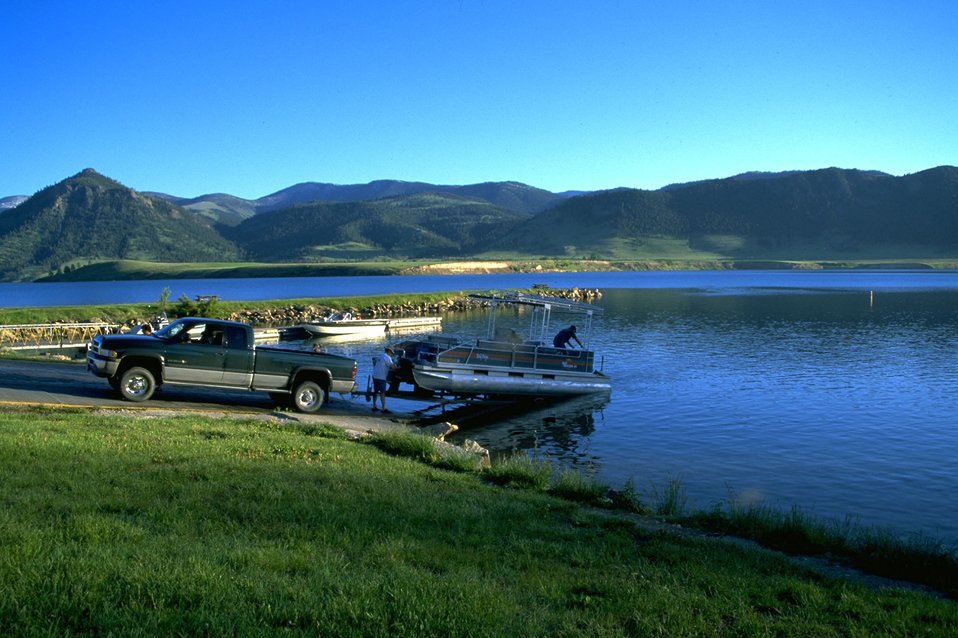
Pulling a boat out of the water at Holter Lake